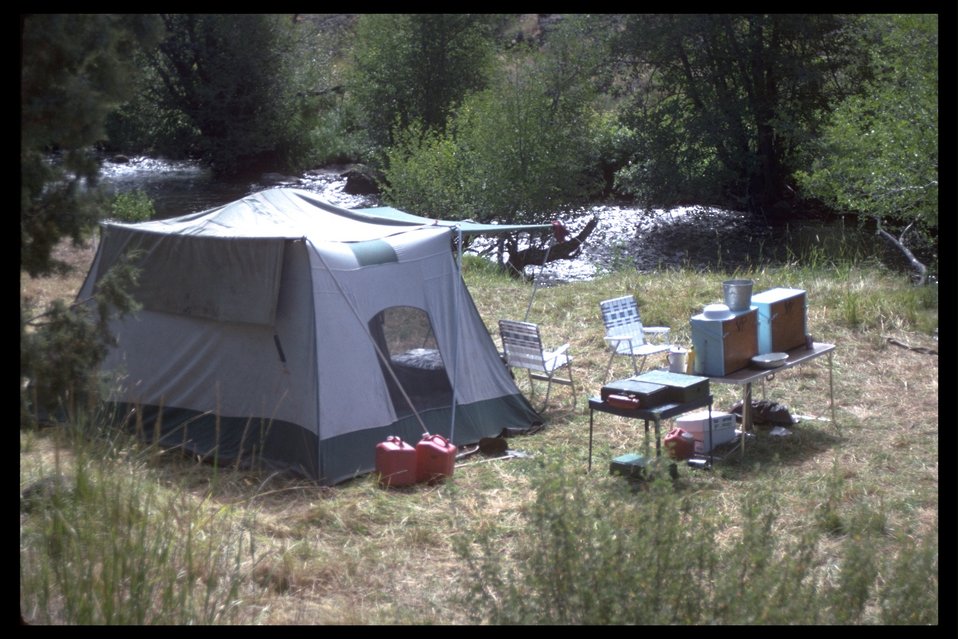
Tent campsite at Blitzen Crossing. South Fork of Donner and Blitzen WSA. (WSA 2-85G)